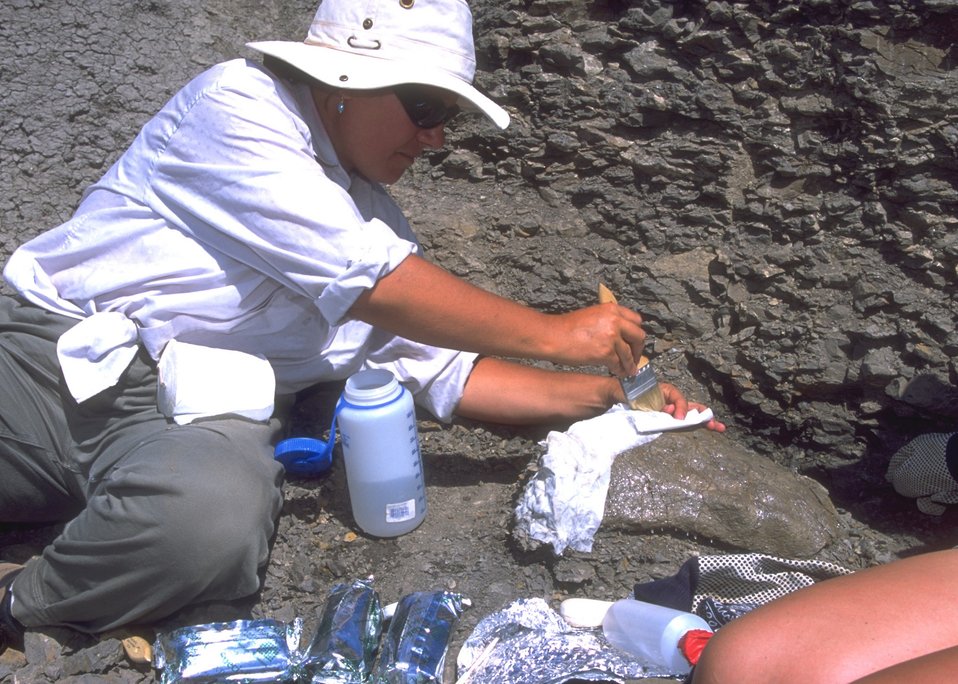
Paleontologist preparing a cast for a dinosaur bone, Lance Creek Fossil Area, Newcastle Field Office.